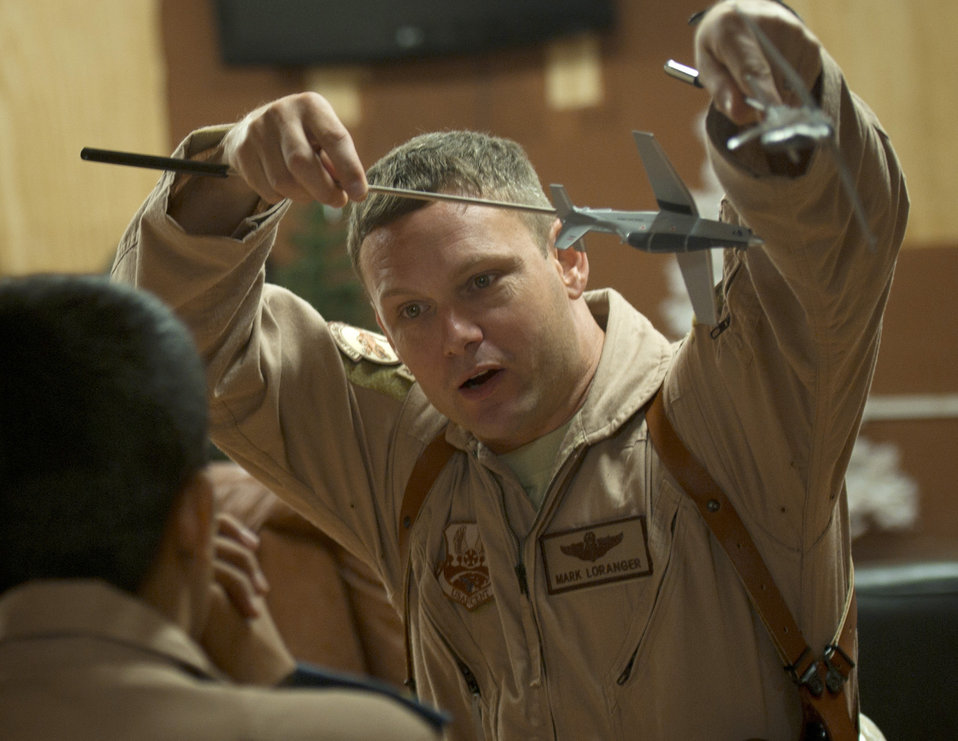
Operation New Dawn/ T6 training

U.S. Air Force Maj. Mark Lorange, 52 Expeditionary Flying Training Squadron, instructor pilot, goes over the flight routine for the day with an Iraqi student instructor pilot at Combat Operating Base Speicher, Tikrit, Iraq on June 29, 2011. Students graduating from the course become some of the first U. S. Air Force trained Iraqi instructor pilots. The students train in the T-6 Texan aircraft.